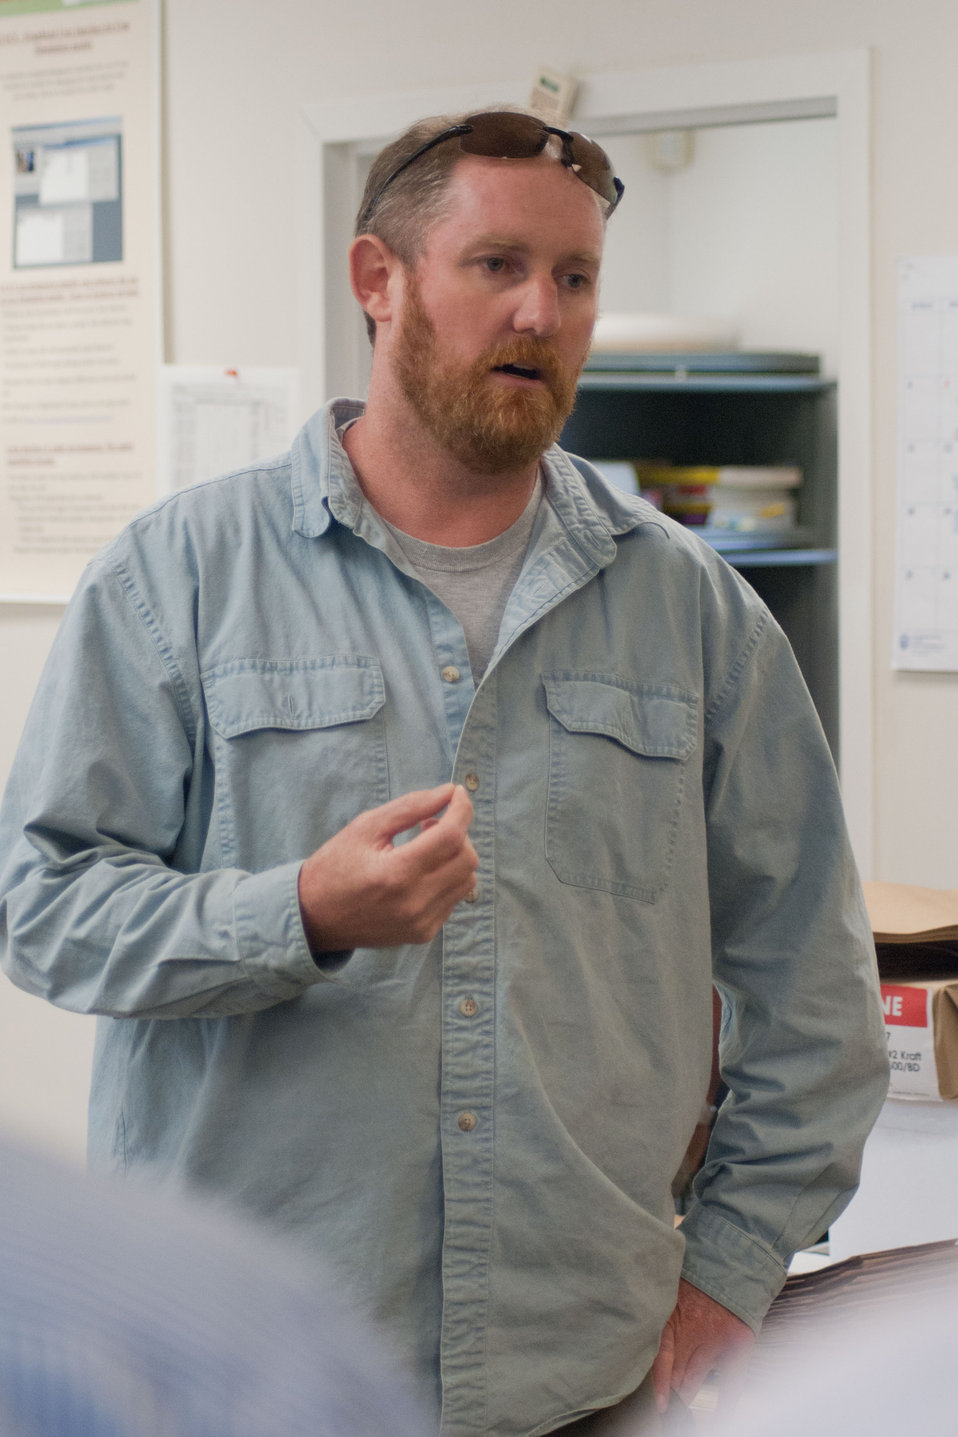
U.S. Department of Agriculture (USDA), Agriculture Research Service's Jackson Fisher, spoke with the Afghan Ministry of Agriculture's Borlaug Fellows at the Beltsville Agricultural Research Center, in Beltsville, MD on Wednesday Sept. 21, 2011.